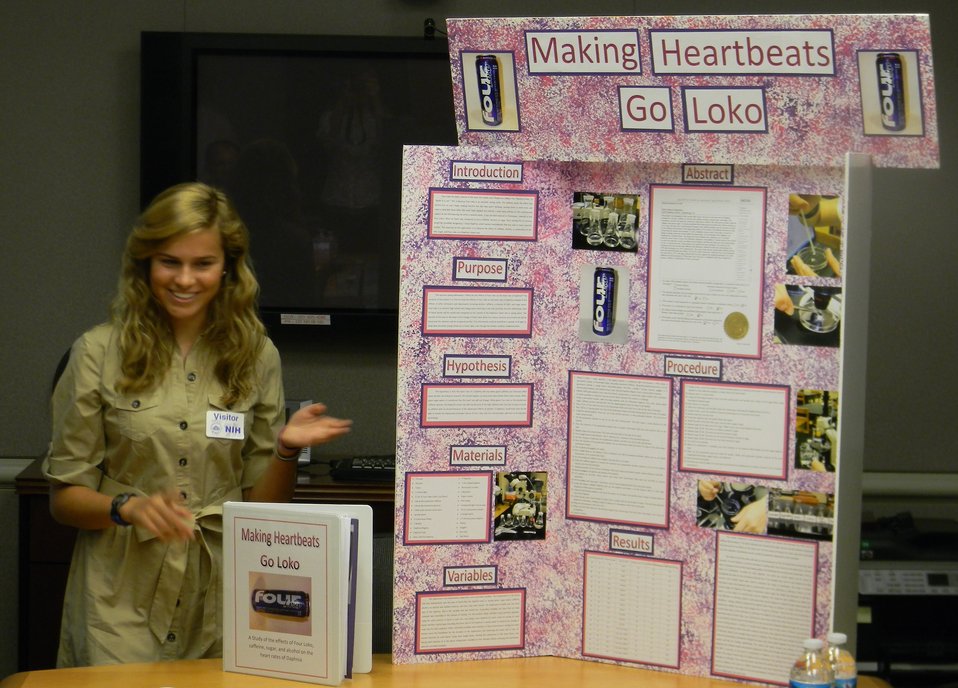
Schumacher presents4

Darby Kathryn Schumacher, 2nd place winner of the 2011 Addiction Science Awards, presents her study to NIDA scientists